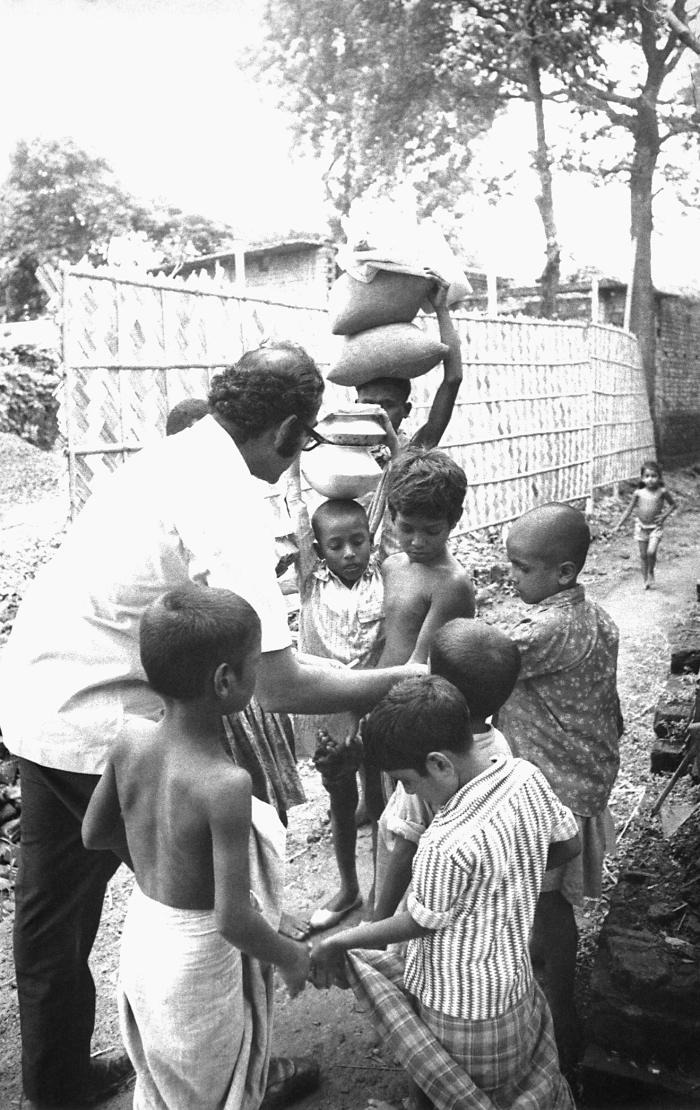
This image depicted World Health Organization (WHO) epidemiologist Dr. Ali Mourad, examining a young man's arms, for signs of smallpox, which leaves scars on its sufferers, the severity of which is directly proportional to the severity of the disease, and the patient's age. However, the younger the patient, the more likely he'll be to loose such scars as he ages.In 1968, the WHO, and other world public health organizations - led by the United States and the then-Soviet Union - came together to join in the fight to eradicate smallpox from the world. The worldwide eradication of this dreaded virus was due to this Smallpox Eradication Campaign, whereupon, a mass-vaccination program was instituted across the globe that lead to the declaration in 1978 by a global commission that smallpox had been eradicated, which was officially accepted by the 33rd World Health Assembly in 1980. Smallpox is a serious, contagious, and sometimes fatal infectious disease.